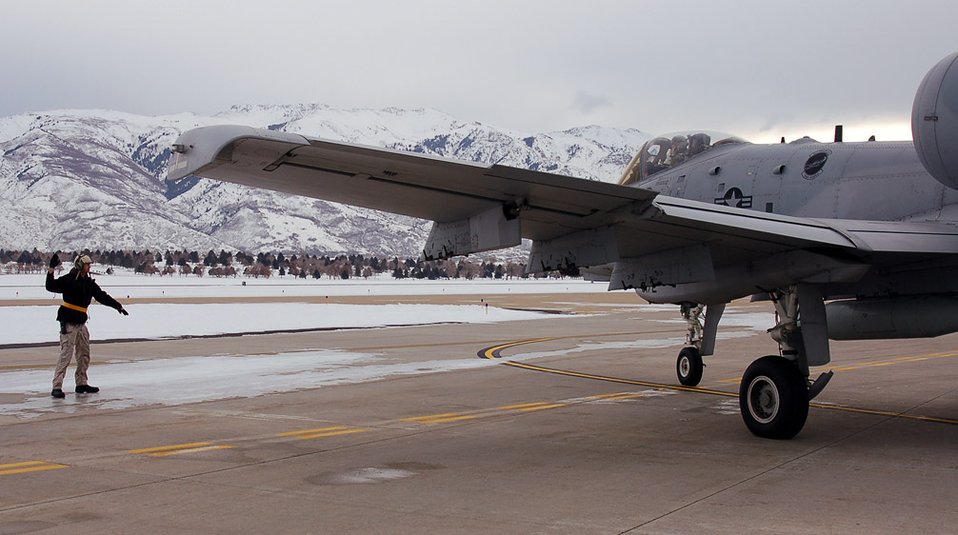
Good for 20 more

Andrew Selph guides Capt. Jesse McCulloch as he taxis the 100th upgraded A-10 Thunderbolt II onto the runway at Hill Air Force Base, Utah, en route to Moody AFB, Ga. The upgrades extend the aircraft's service life until 2028. Mr. Selph is a crew chief with the 571st Aircraft Maintenance Squadron.